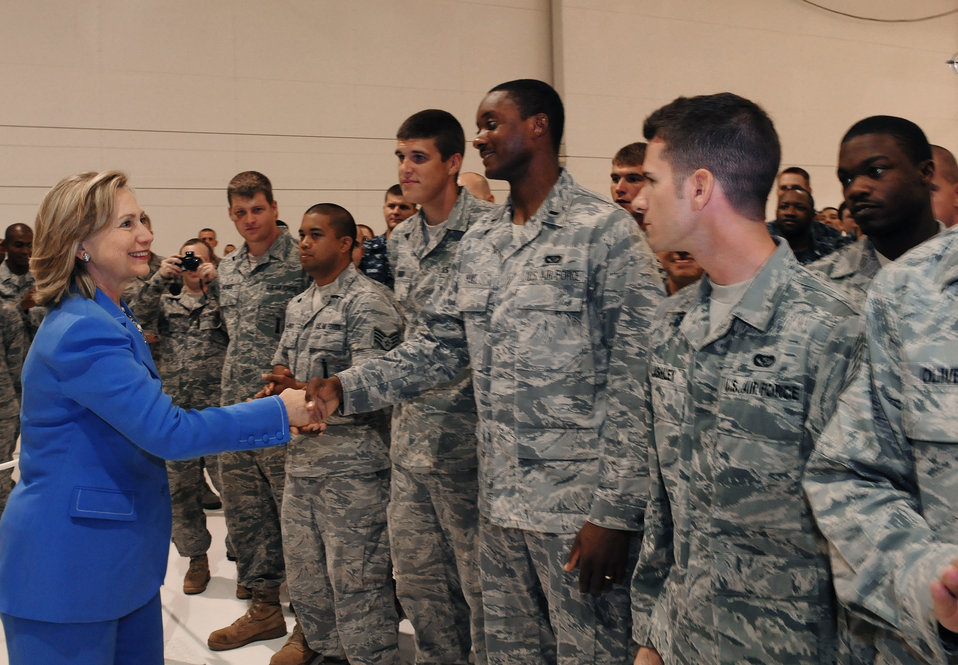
Secretary of State delivers message of praise to Andersen servicemembers

Secretary of State Hillary Clinton shakes hands with servicemembers Oct. 29, 2010, at Andersen Air Force Base, Guam. Secretary Clinton visited the base as part of her trip to the Asia-Pacific region.